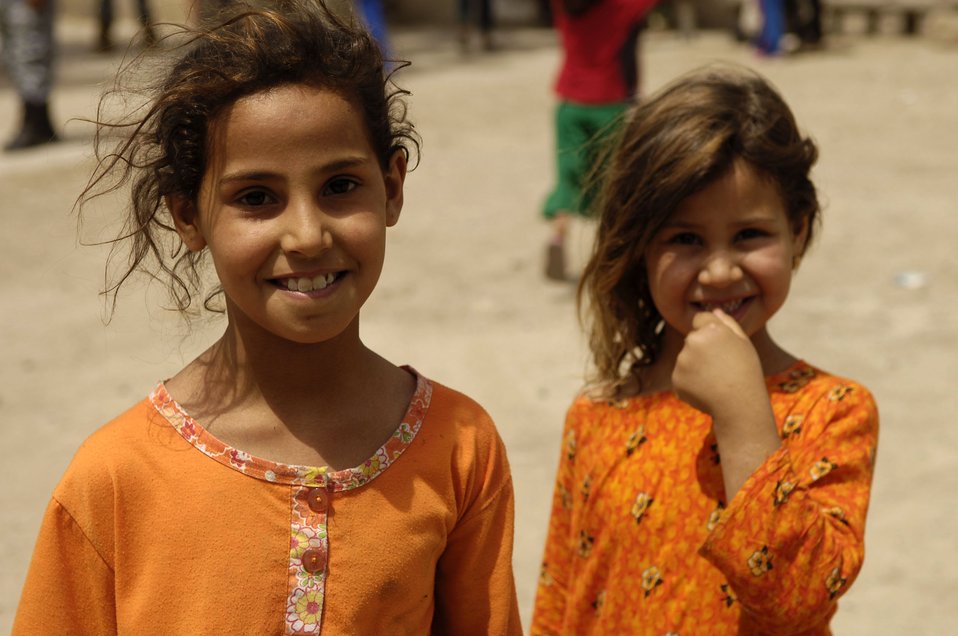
Gifts for the tender hearts

Iraqi children are all smiles May 24 after receiving gifts from the Iraqi National Police in Al Furat, Iraq. During a recent humanitarian mission, U.S. servicemembers worked with the Iraqi police to distribute school supplies, toys and treats to Iraqi children.